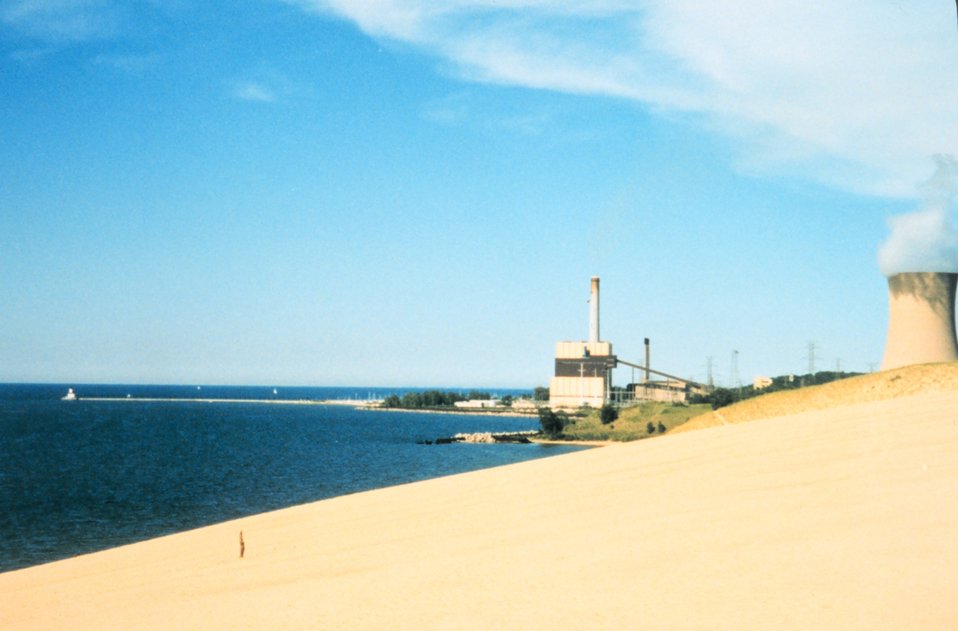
Looking east to electric power plant on the south shore of Lake Michigan